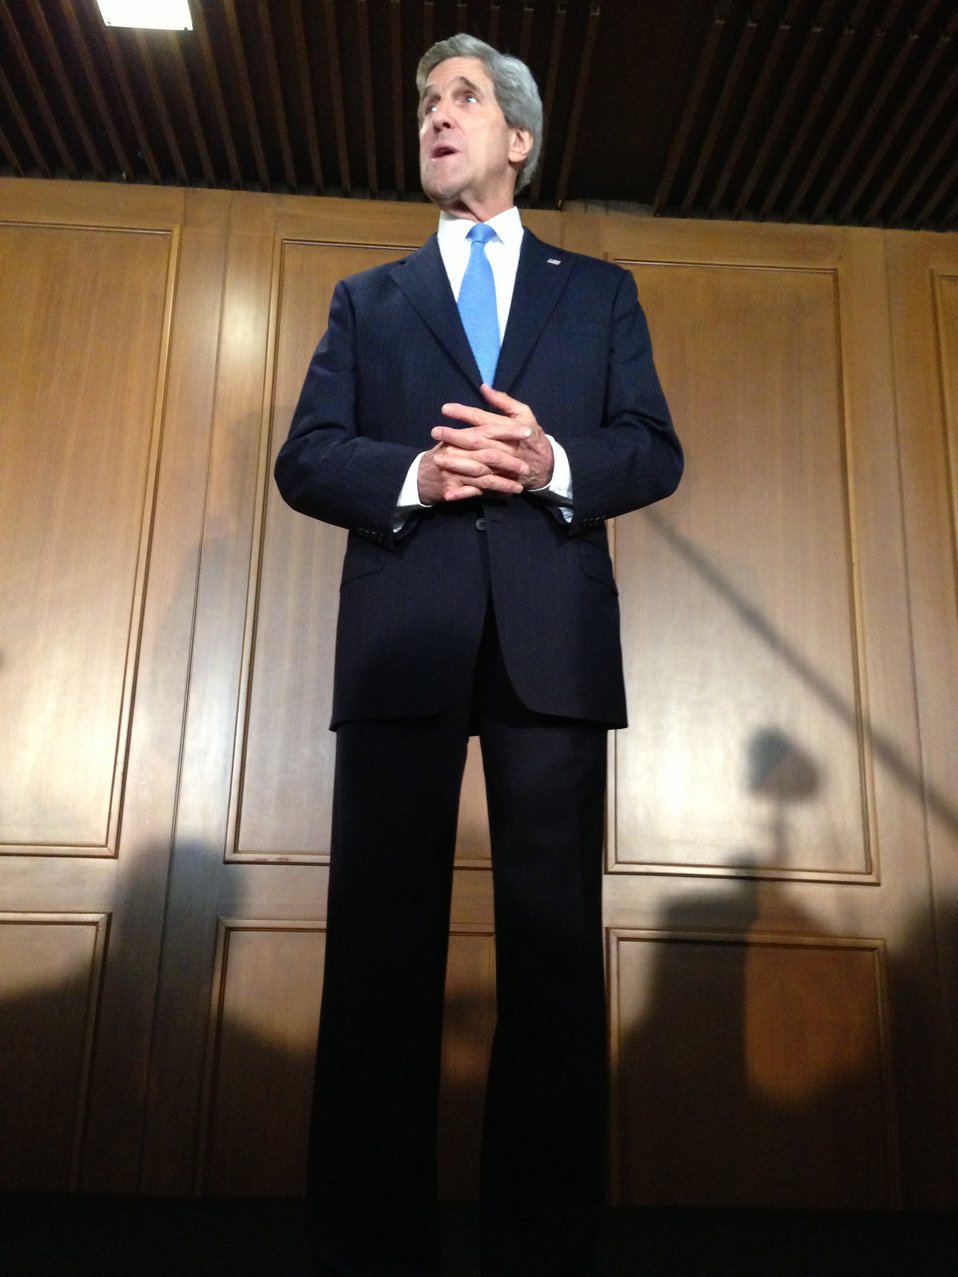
Secretary Kerry Reflects on the Life of Foreign Service Officer Anne Smedinghoff

U.S. Secretary of State John Kerry reflects on the life of Anne Smedinghoff, a Foreign Service Officer who lost her life in Afghanistan on April 6, and says, She was as 'everything our country stands for, during his remarks to U.S. Consulate General staff and families in Istanbul, Turkey, April 7, 2013.